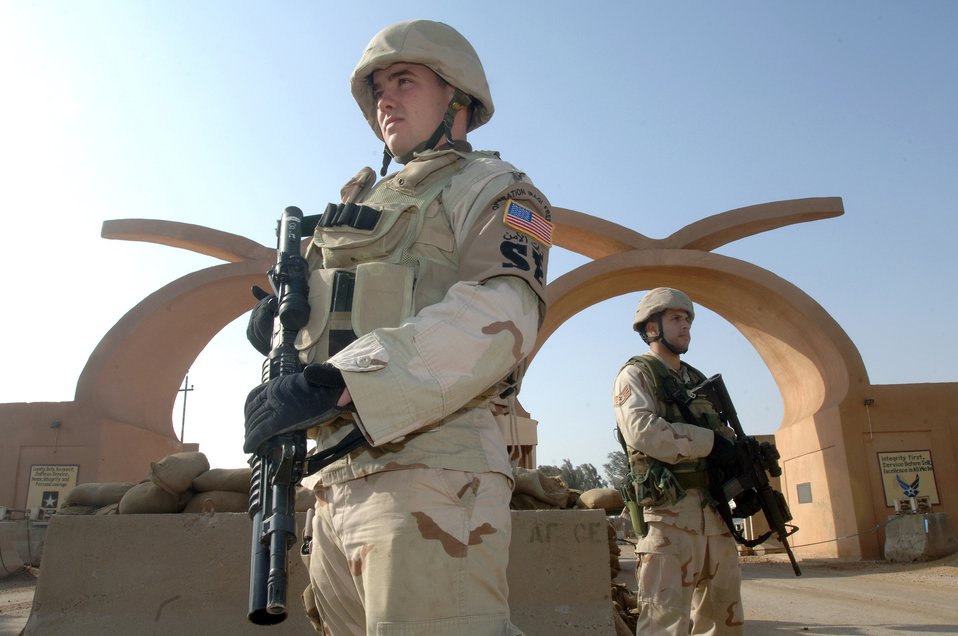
All secure

ALI BASE, Iraq (AFPN) -- Airman 1st Class Joshua Williams and Staff Sgt. Marcus Serrano provide security at a base control point Feb. 16. The Airmen are with the 407th Expeditionary Security Forces Squadron.